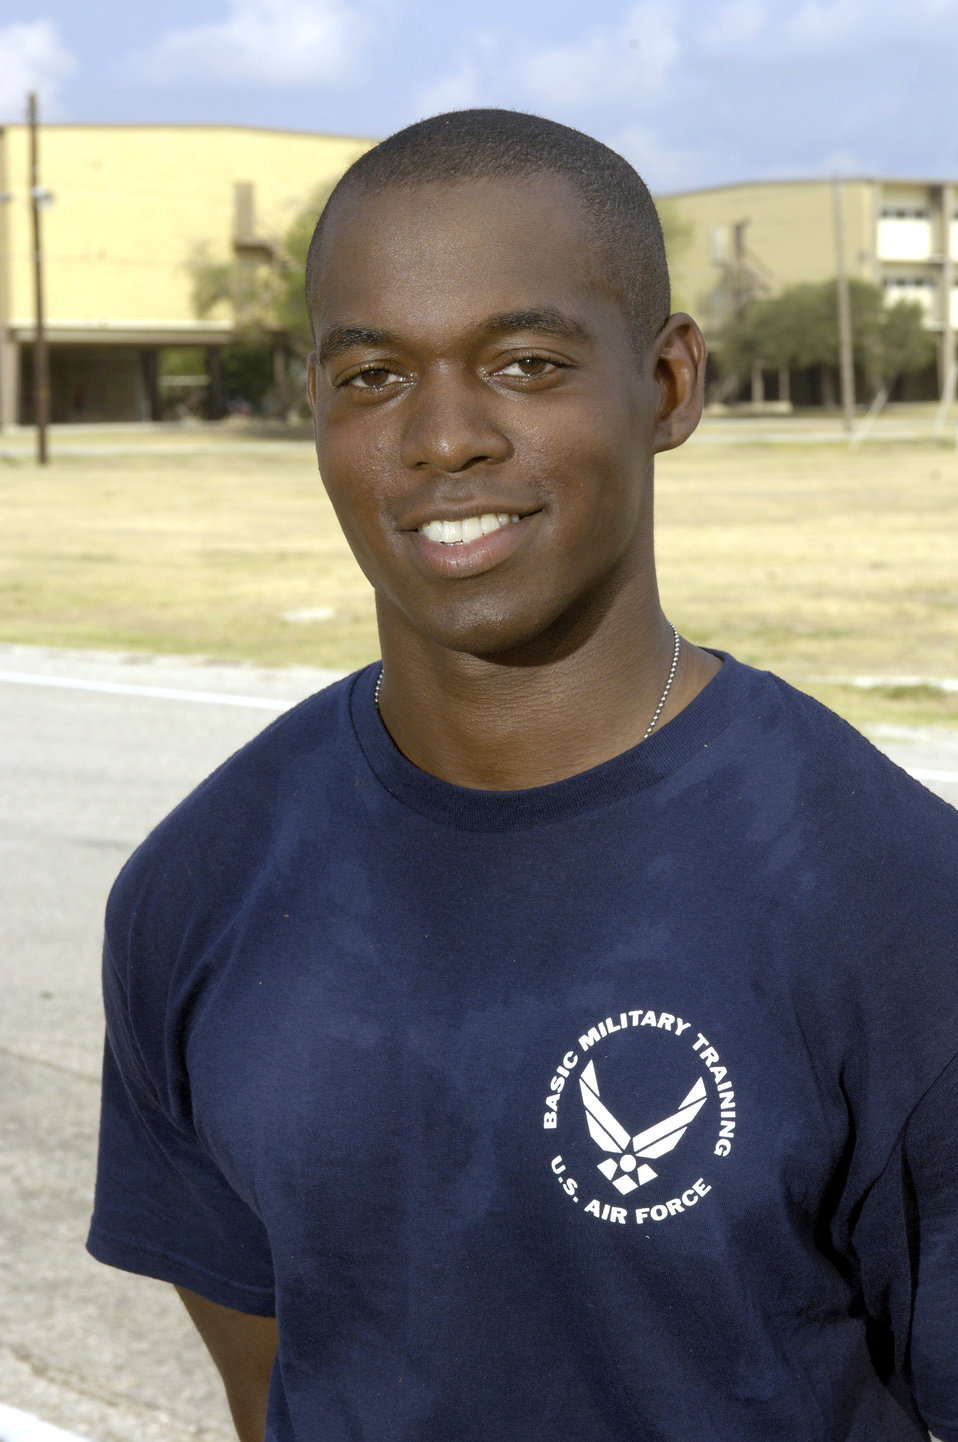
Basic training grads say 4th of July feels different now

Airman Jeremy Hoover graduated from basic military training at Lackland Air Force Base, Texas, on Friday, June 30. The Airman had completed a two-and-one-half-mile run June 29. An Air Force